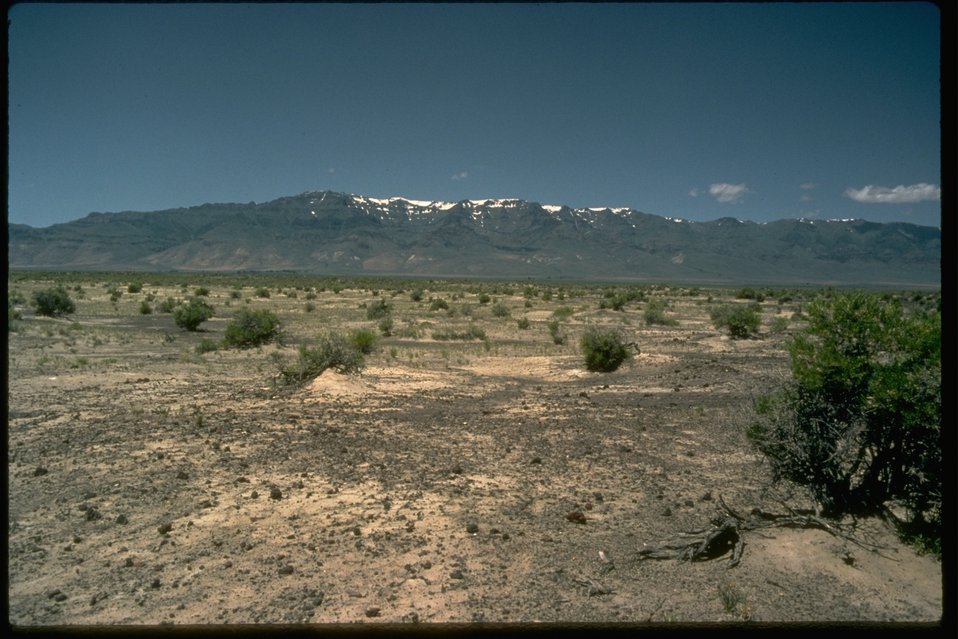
The brush of the Alvord Desert looking towards Steens Mountain. OR 2-74